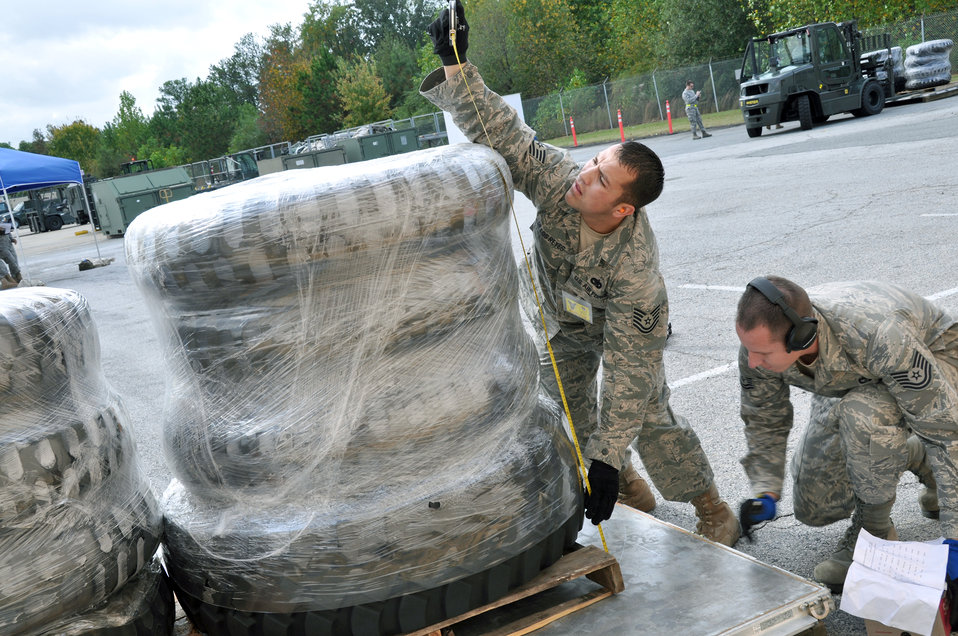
Port Dawg Challenge tests skills, strengthens camaraderie

Tech. Sgt. Cody De Los Reyes and Tech. Sgt. Justin Adams measure the height of a pallet stocked with tires during the pallet-building event Oct. 26, 2010, at Air Force Reserve Command's Port Dawg Challenge at Dobbins Air Reserve Base, Ga. Sergeants De Los Reyes and Adams are both assigned to the 67th Aerial Port Squadron from Hill Air Force Base, Utah.